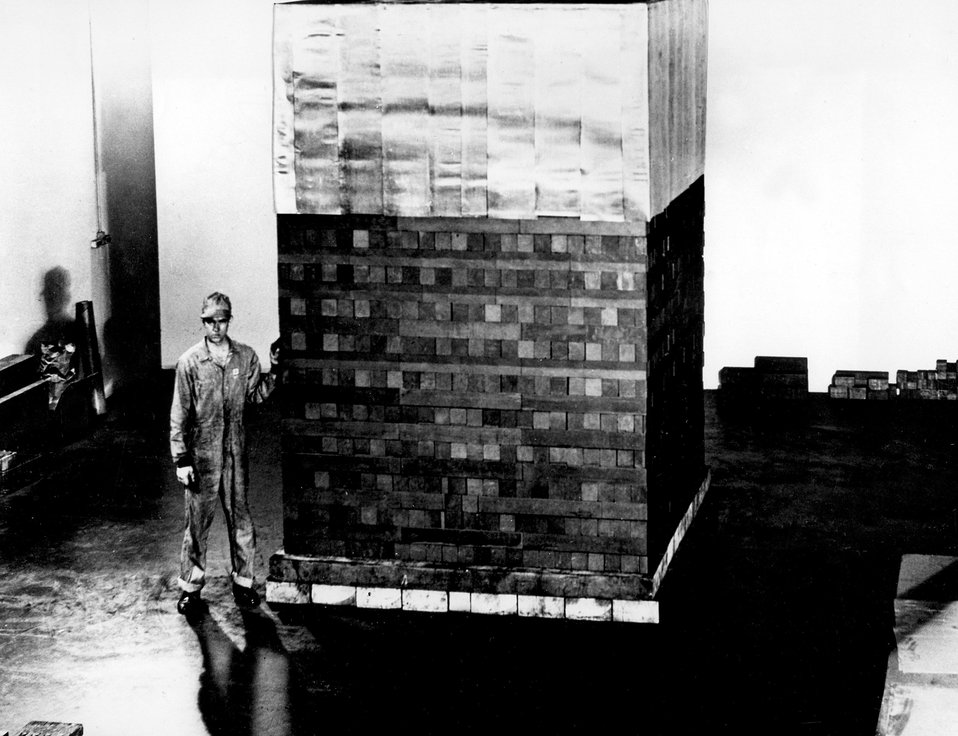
Exponential pile. At least 29 exponential piles were constructed in 1942 under the West Stands of Stagg Field.